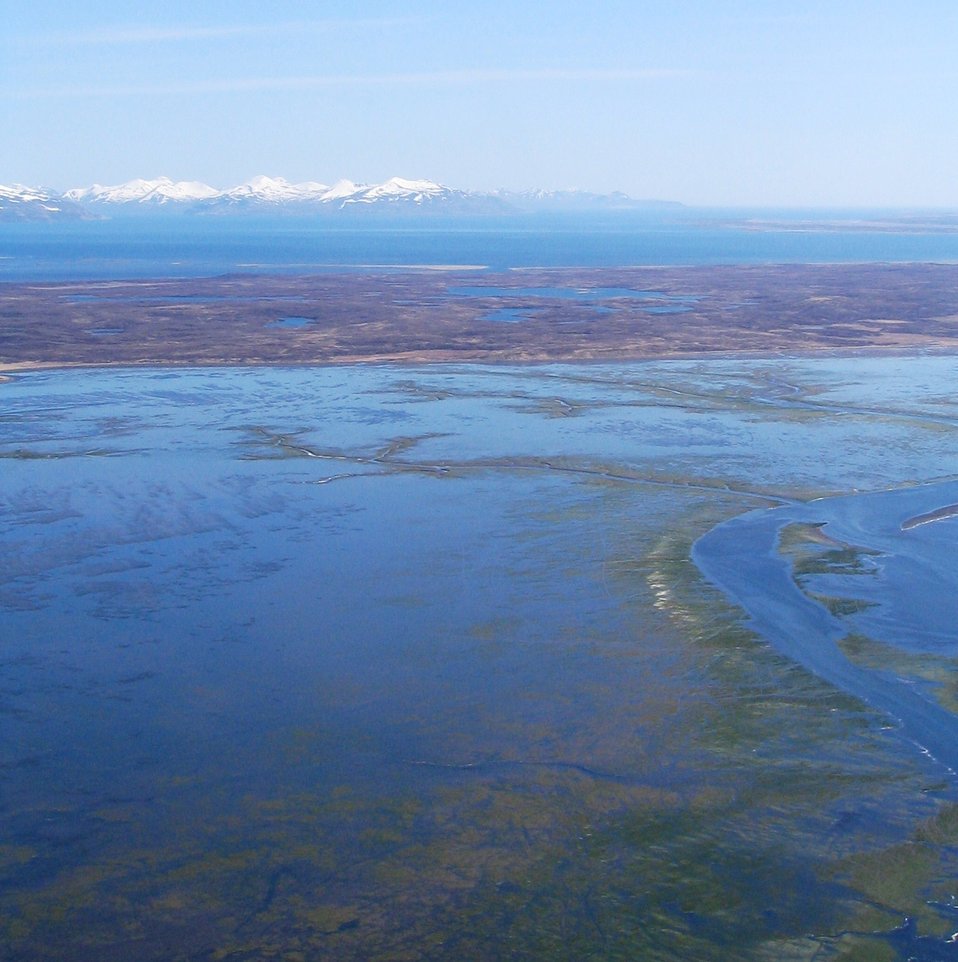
Izembek Isthmus

View from Izembek Lagoon to Cold Bay, Izembek Wilderness, Izembek National Wildlife Refuge
Photo by Kristine Sowl,
USFWS, Public Domain